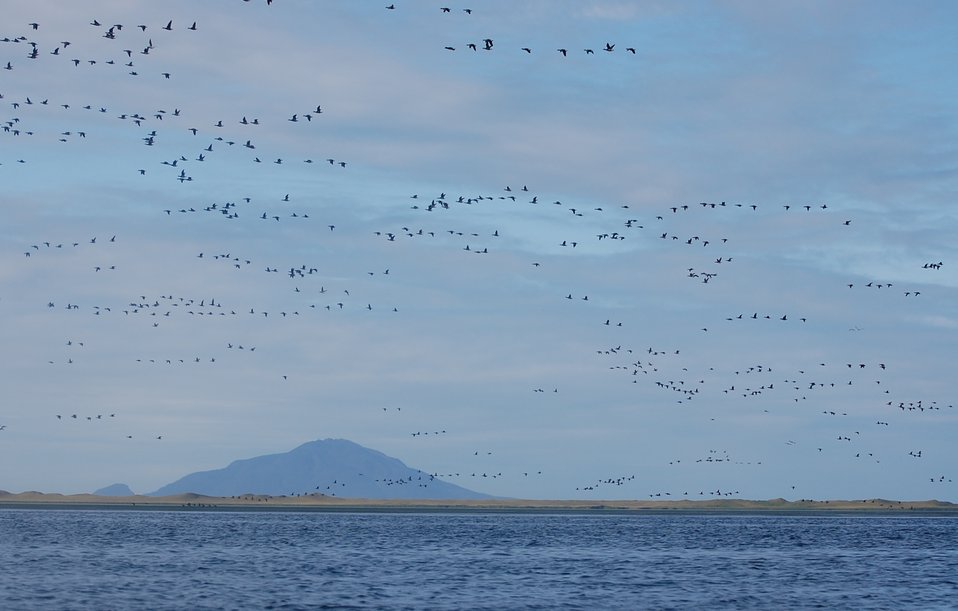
Brant at Izembek Lagoon, Izembek National Wildlife Refuge